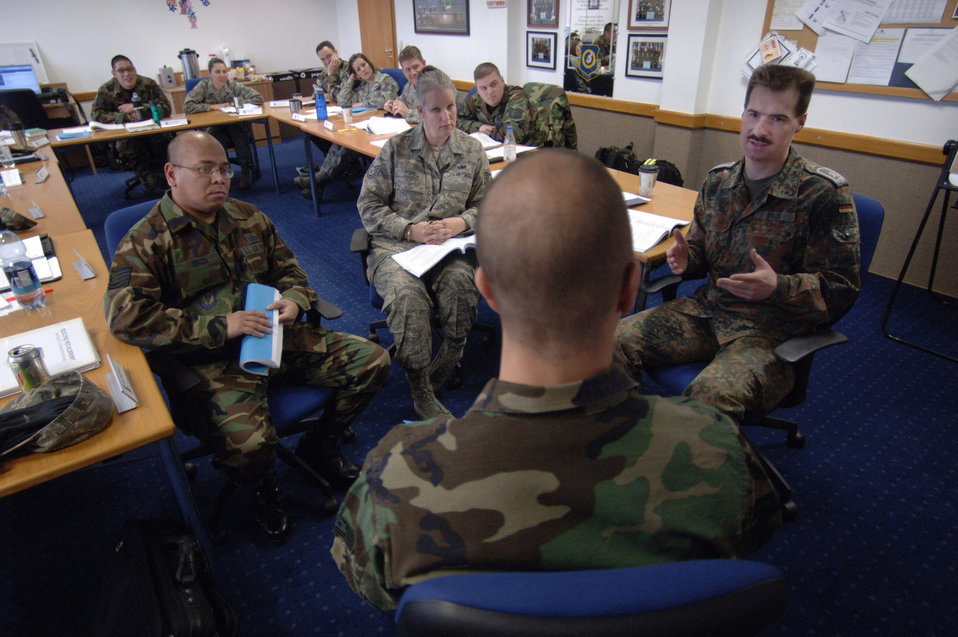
German sergeant enrolls in USAFE NCO Academy

German air force Master Sgt. Holger Fels (right) takes part in a scenario that teaches supervisors how to involve subordinates in the process of problem sovling during his fifth week of study March 26 at the Kisling NCO Academy at Kapaun Air Station, Germany. Sergeant Fels voluntarily enrolled in the six-week course to prepare for his next assignment as an exchange instructor at the Senior NCO Academy at Maxwell Air Force Base, Ala. Joining Sergent Fels in the scenario were Tech. Sgts. Salvador Obico, Paula Pope and Bronson Peters.